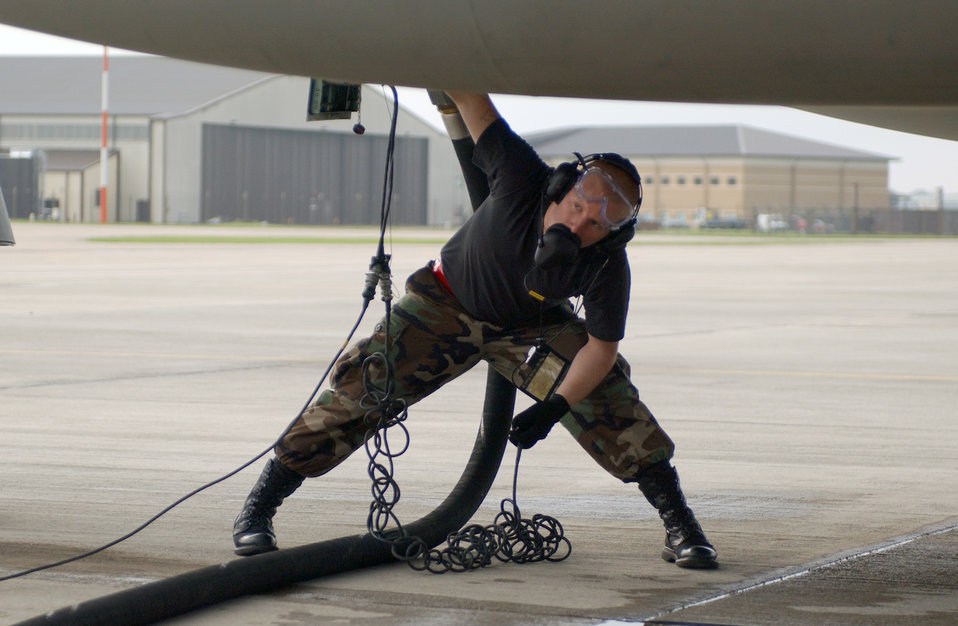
Hot pits

Airman 1st Class David Brittain attaches a cable to an F-15 Eagle which allows the pilot to have direct communication with the crew chiefs during